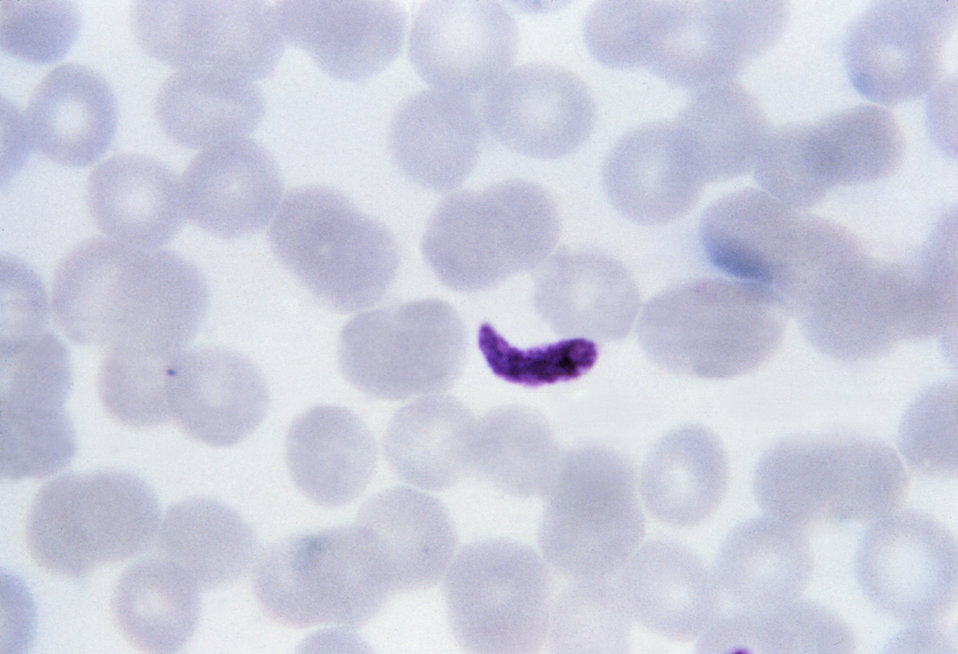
This thin film Giemsa stained micrograph reveals how fused platelets can resemble a Plasmodium spp. gametocyte.